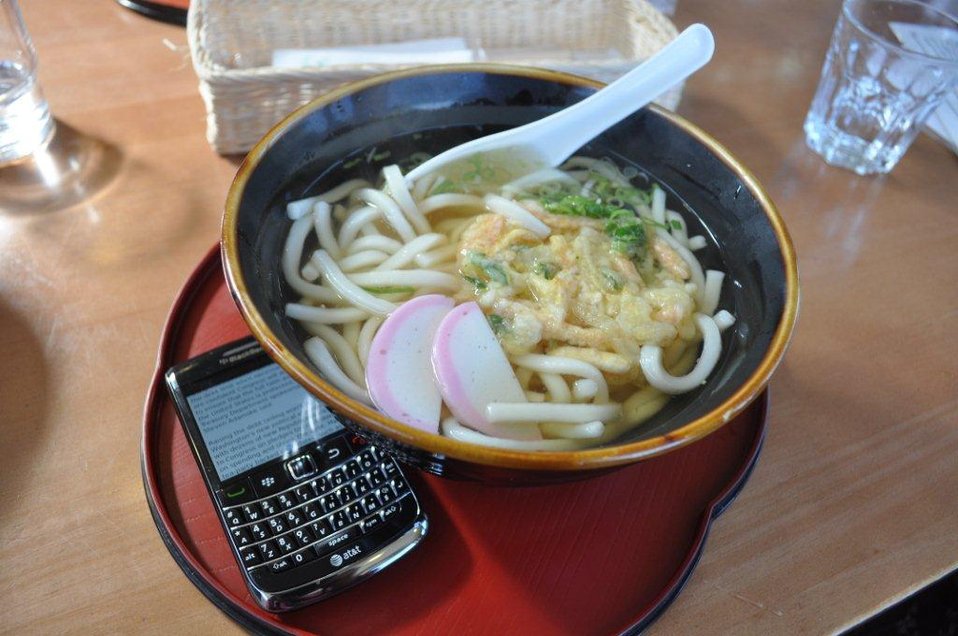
Geithner visit to Asia, November 4-12, 2010

The perfect Treasury meal - Udon and a blackberry (Kyoto, Japan)